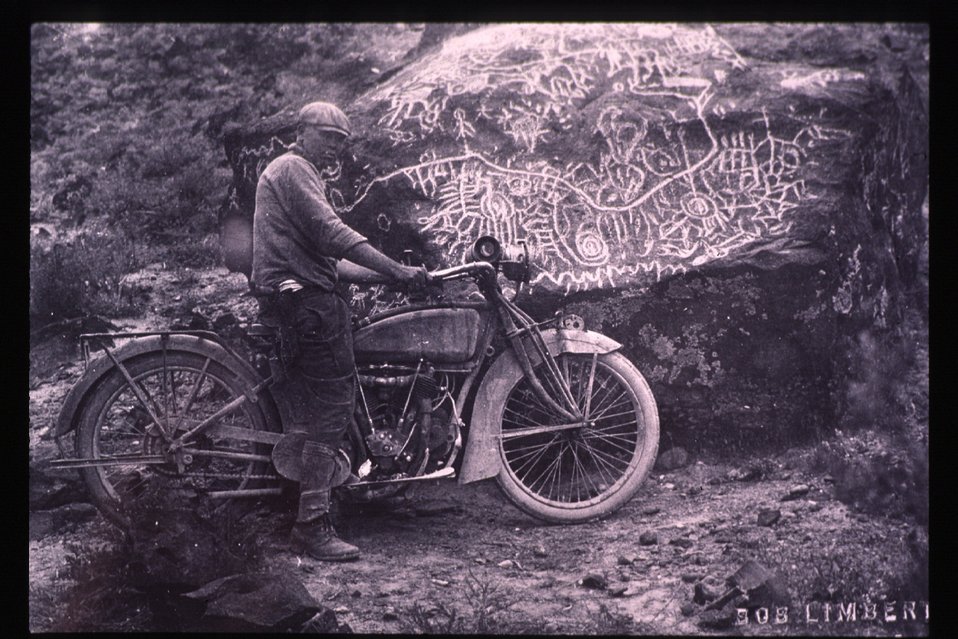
Map Rock petroglyph Archeology LSRD Lower Snake River District